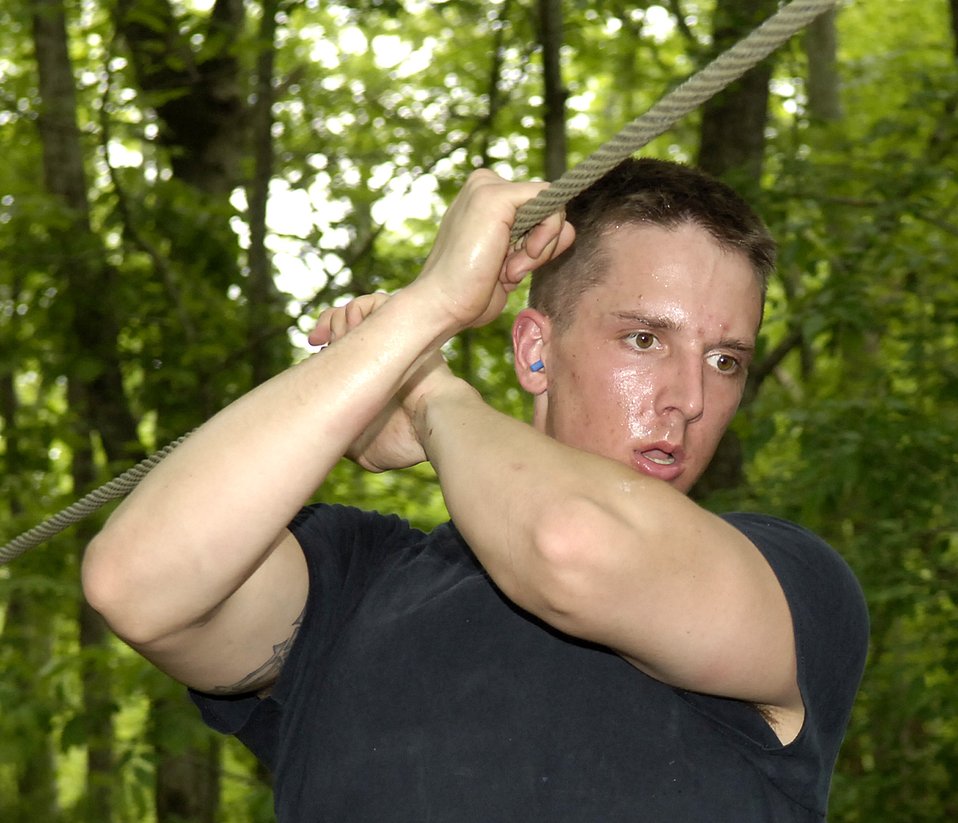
Security forces Airmen at SWAT competition

Senior Airman Jason Vavro guides himself across a rope bridge during a timed event at the Louisiana State SWAT Team Competition in Alexandria, La., on Tuesday, May 2, 2006. Airman Vavro is with the 2nd Security Force Squadron at Barksdale Air Force Base, La.